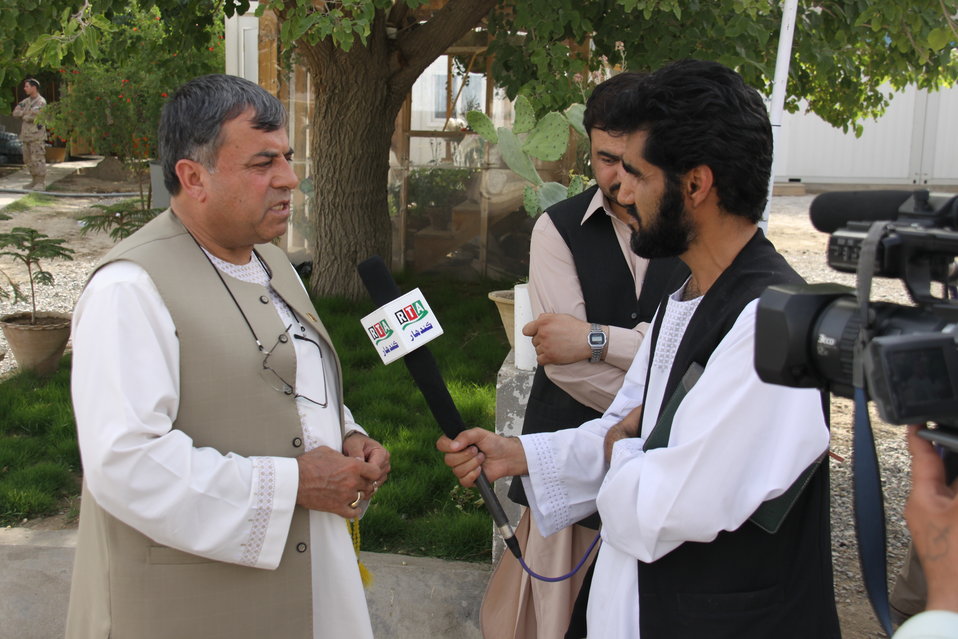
Meeting with Local Leaders in Kandahar